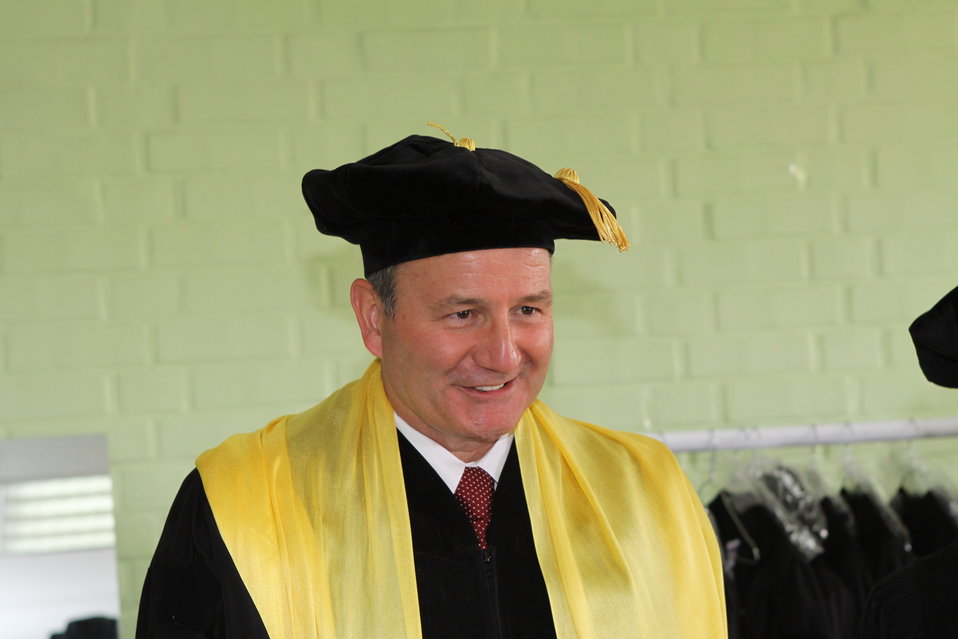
100526 AUAF Graduation 069